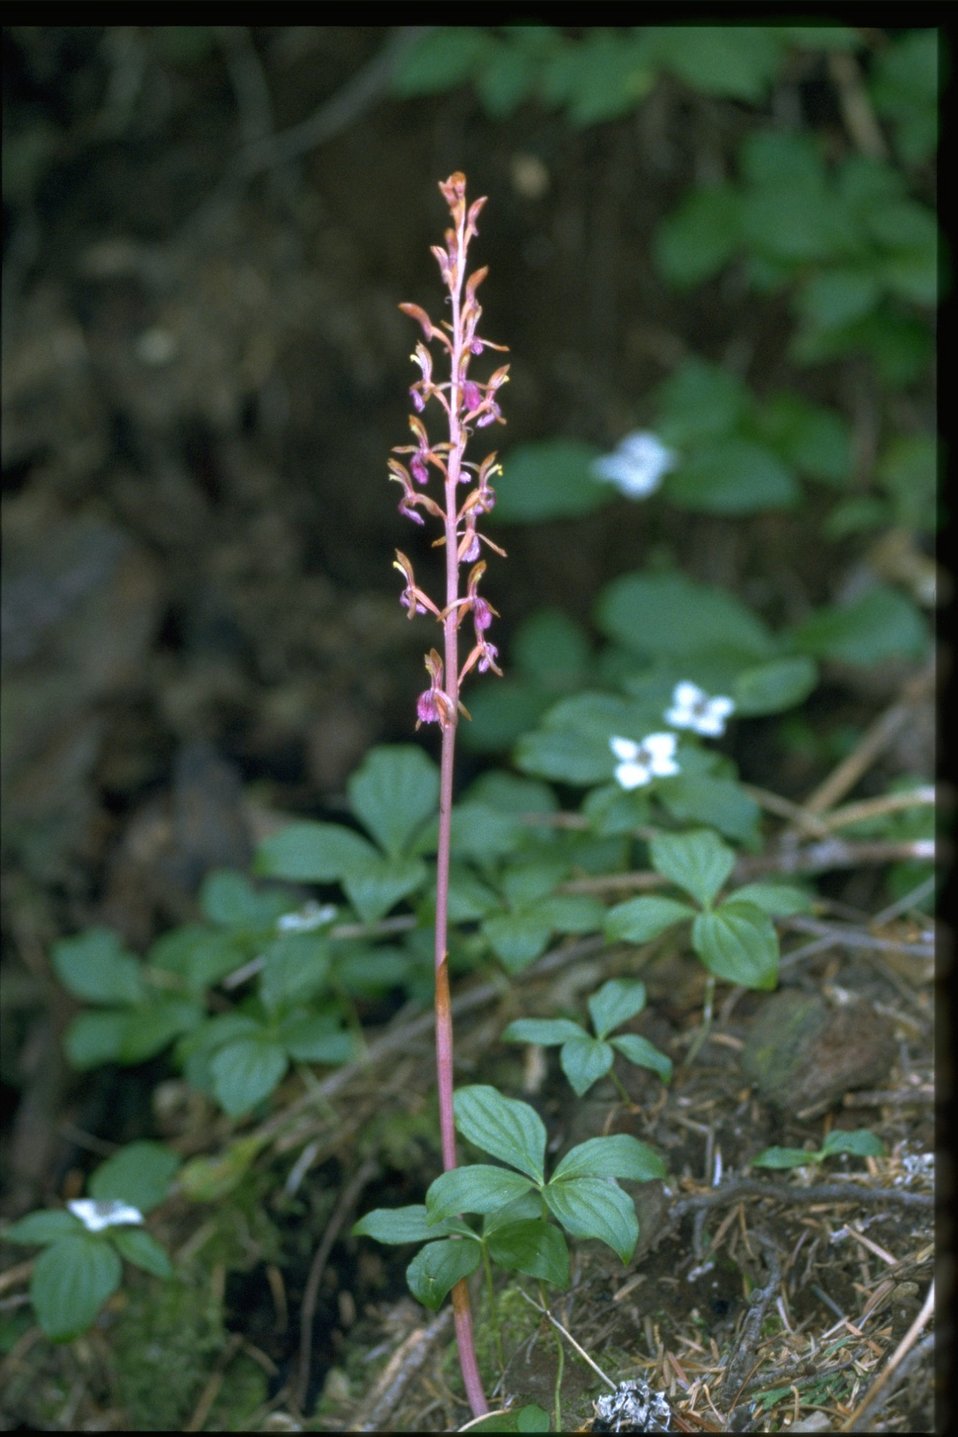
Farshot of Corallorhiza maculata.